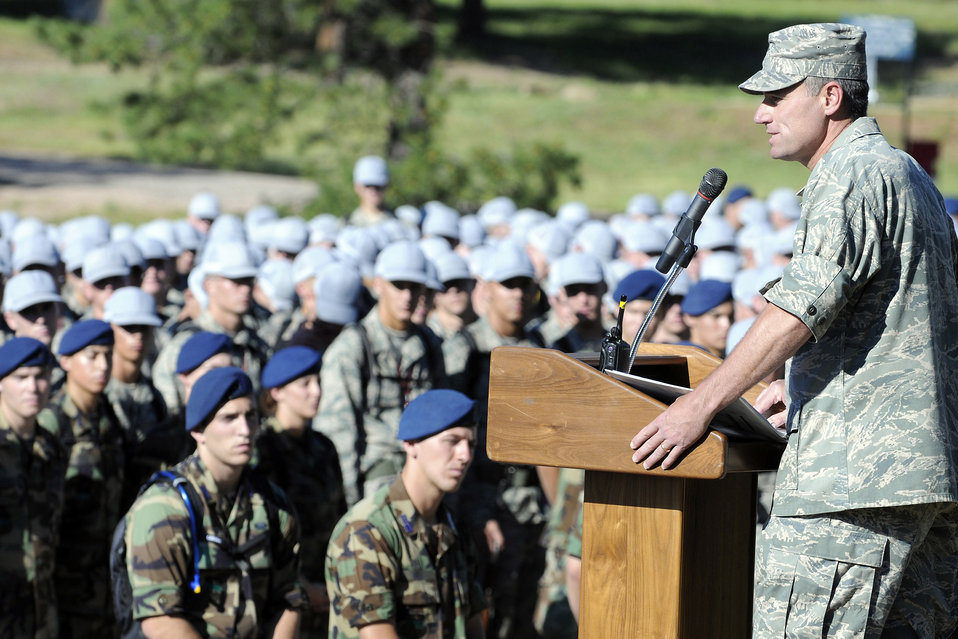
New cadets discover Jacks Valley

Commandant of Cadets Brig. Gen. Samuel Cox speaks to cadets in Jacks Valley training area near Colorado Springs, Colo., July 13 as they begin the field training portion of basic cadet training.